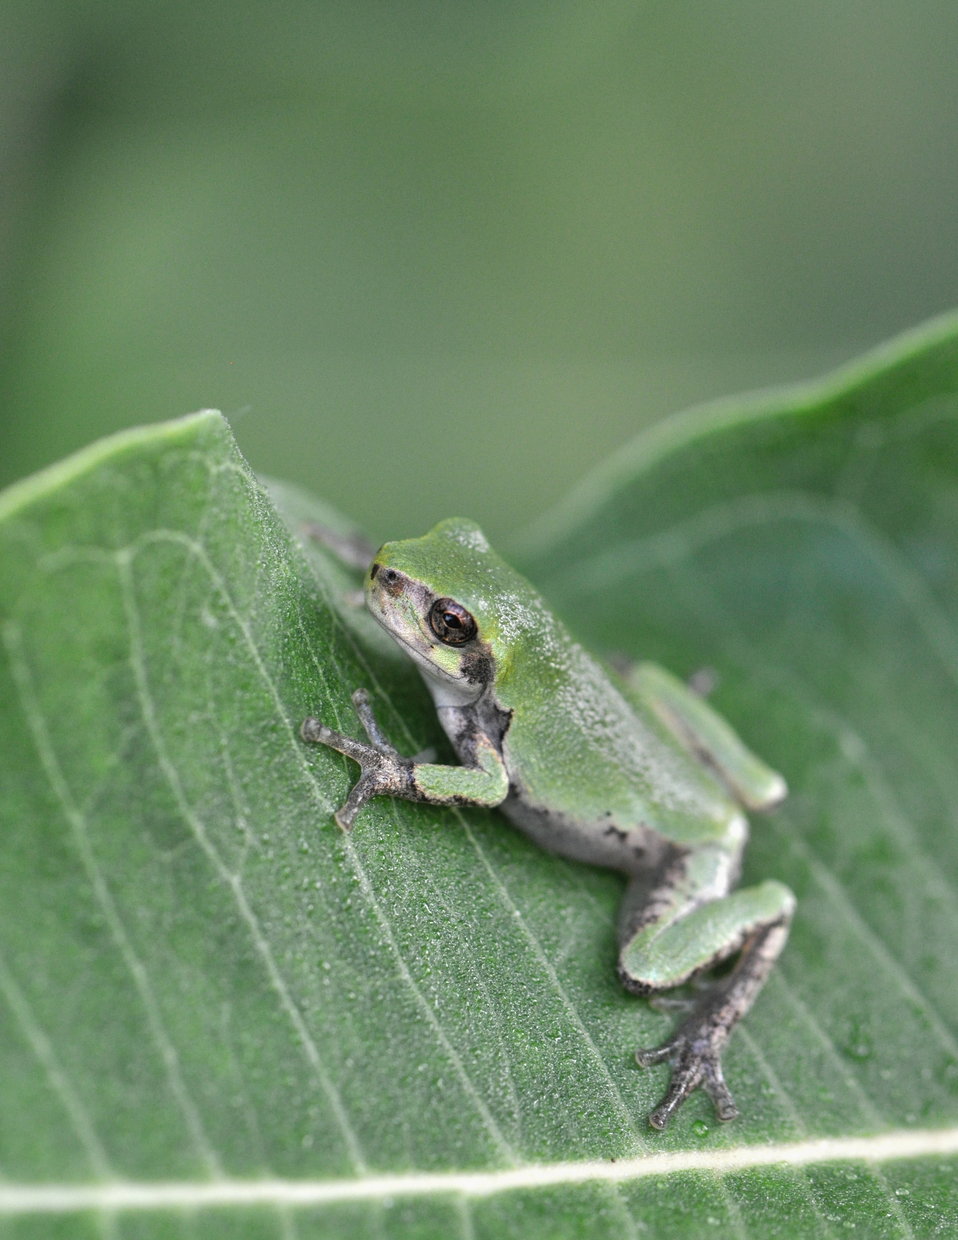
Eastern Gray Treefrog at Horicon National Wildlife Refuge